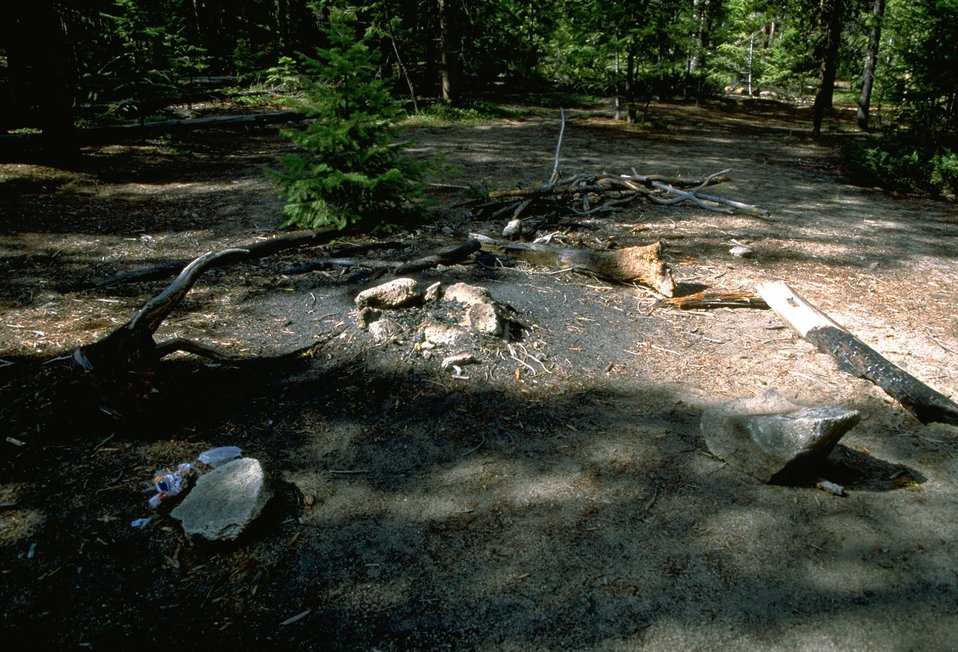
A campsite in the Humbug Spires area